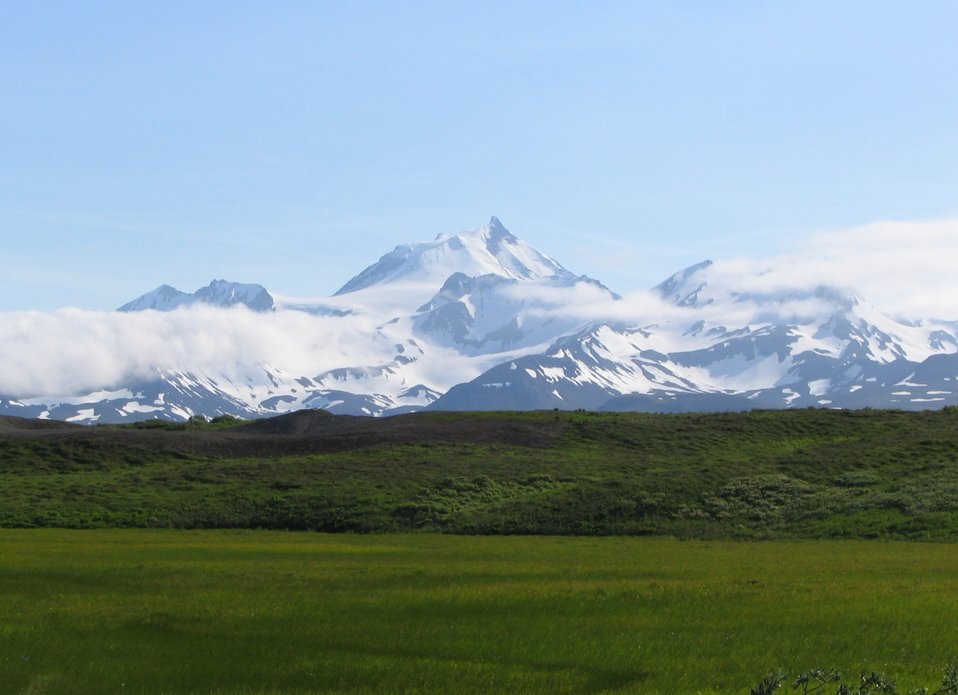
Frosty Peak

Izembek National Wildlife Refuge